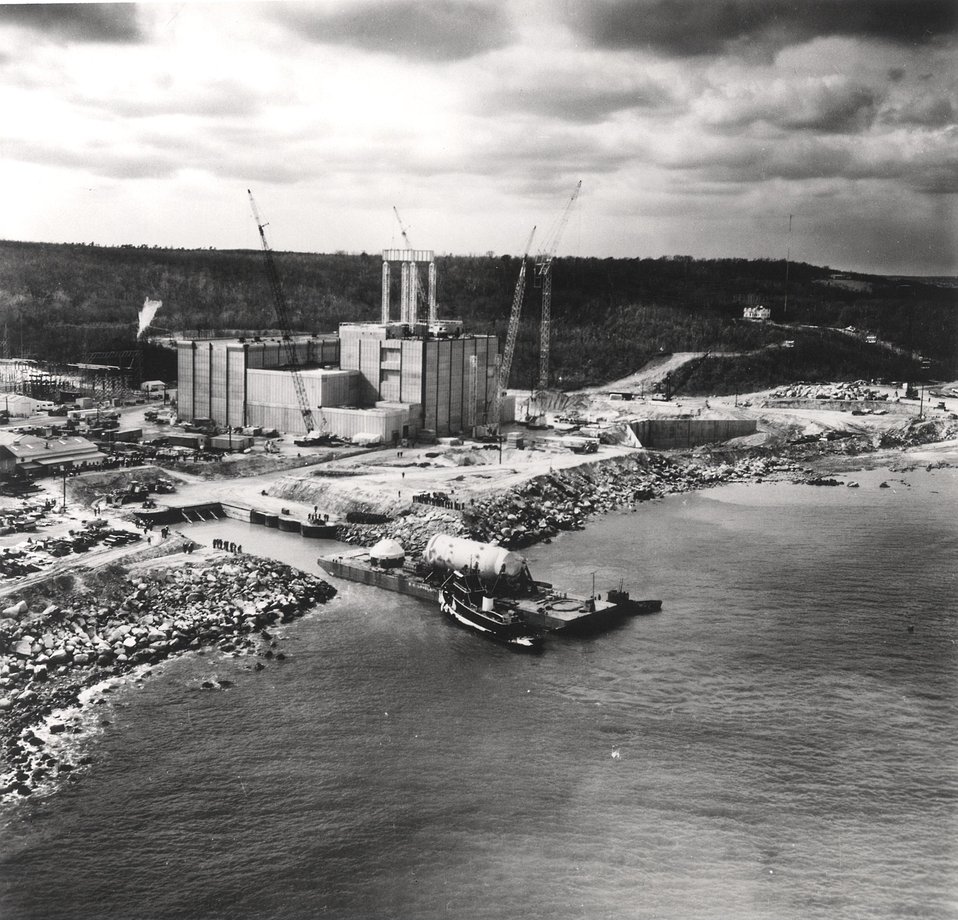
The 525-ton, 65-foot tall reactor vessel for the Boston Edison Company's Pilgrim Nuclear Station took a month-long, 3,587-mile voyage to go from the fabrication shops at Combustion Engineering on the Tennessee River to the plant site. Was nudged into a landing--about a mile south of where the Pilgrims had landed 350 years before. Circa 1971.